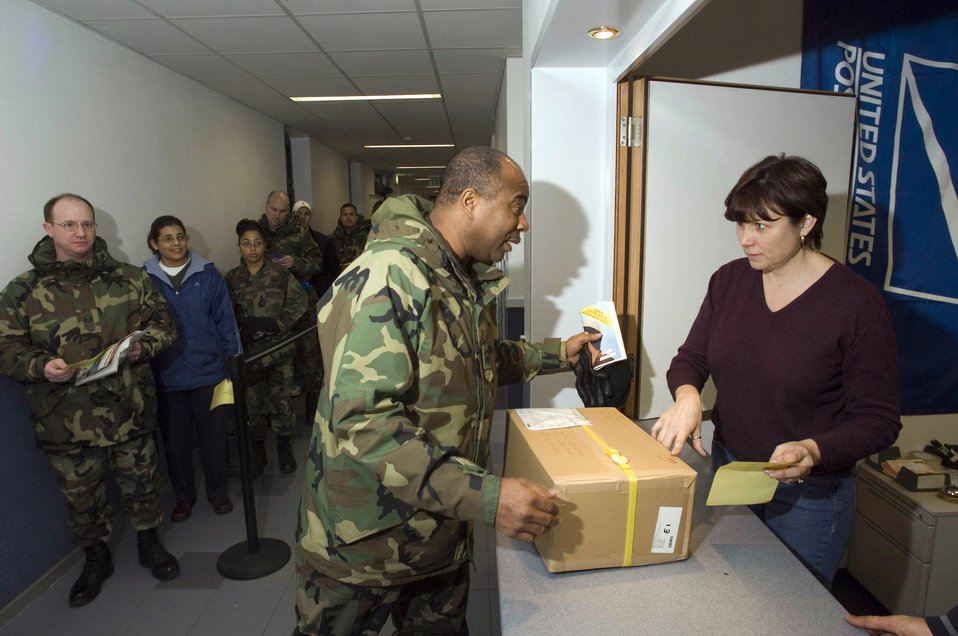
Postal service

RAMSTEIN AIR BASE, Germany (AFPN) -- Senior Master Sgt. Otis Solomon receives his mail from Cathy Ferguson at the North Side Post Office. Although Christmas has past, packages are still arriving here. Ms. Ferguson is a 435th Communication Squadron's post office employee hired for the Christmas season.